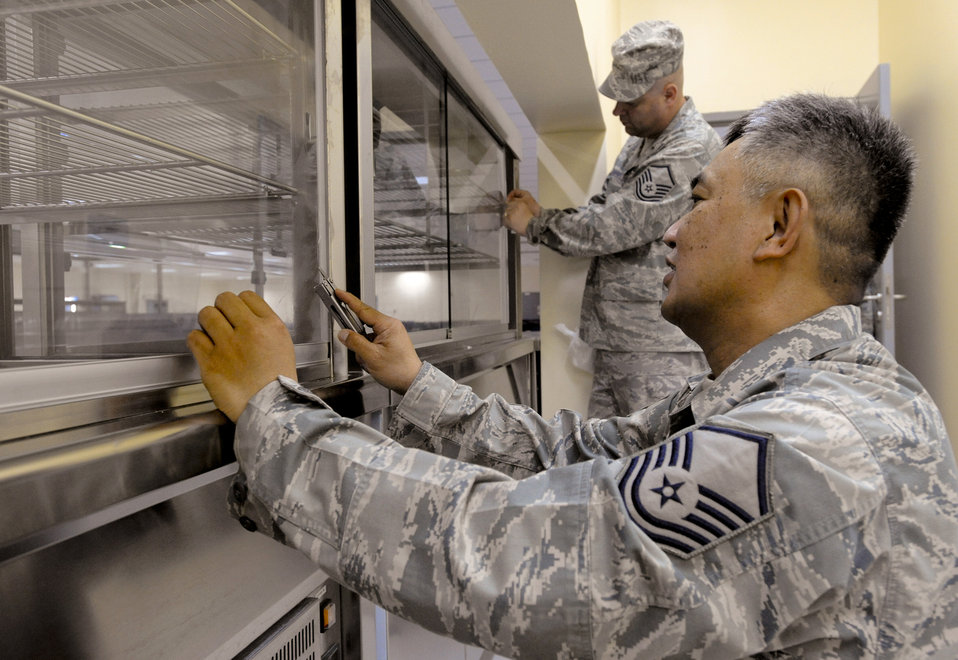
Feeding the force

Master Sgt. Ramon Erpelo and Master Sgt. Robert Campbell sanitize and set up equipment in the new Coalition Compound Dining Facility March 23 at an air base in Southwest Asia. The new dining facility, scheduled to open soon, will have a state of the art kitchen to feed the servicemembers stationed here. Sergeant Eperlo is native to Chicago and is deployed from McChord Air Force Base, Wash. Sergeant Campbell is from Anchorage, Alaska, and deployed from Elmendorf AFB, Alaska. Both are assigned to the 379th Expeditionary Force Support Squadron.